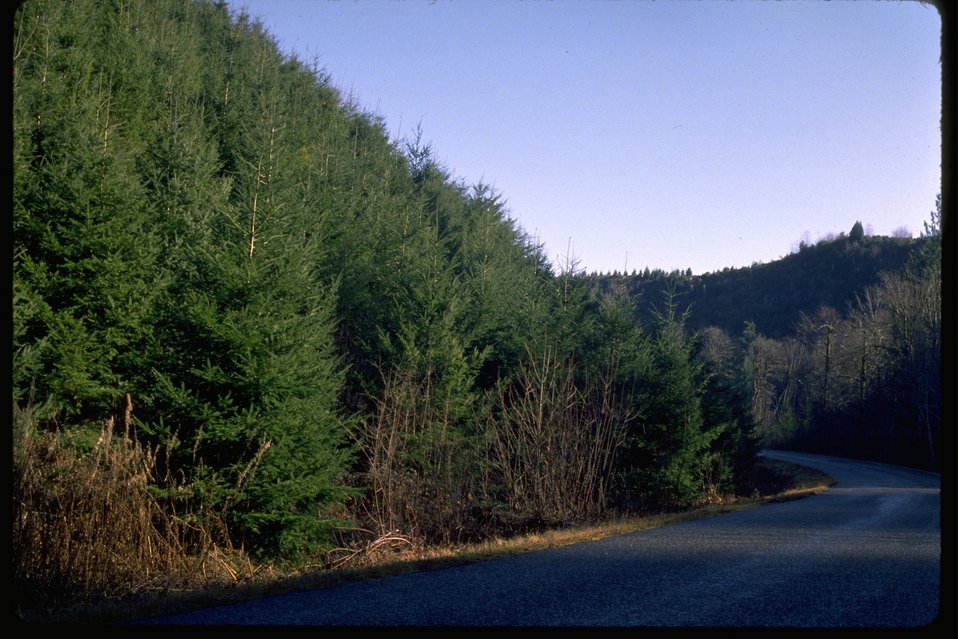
Oxbow Burn site area.